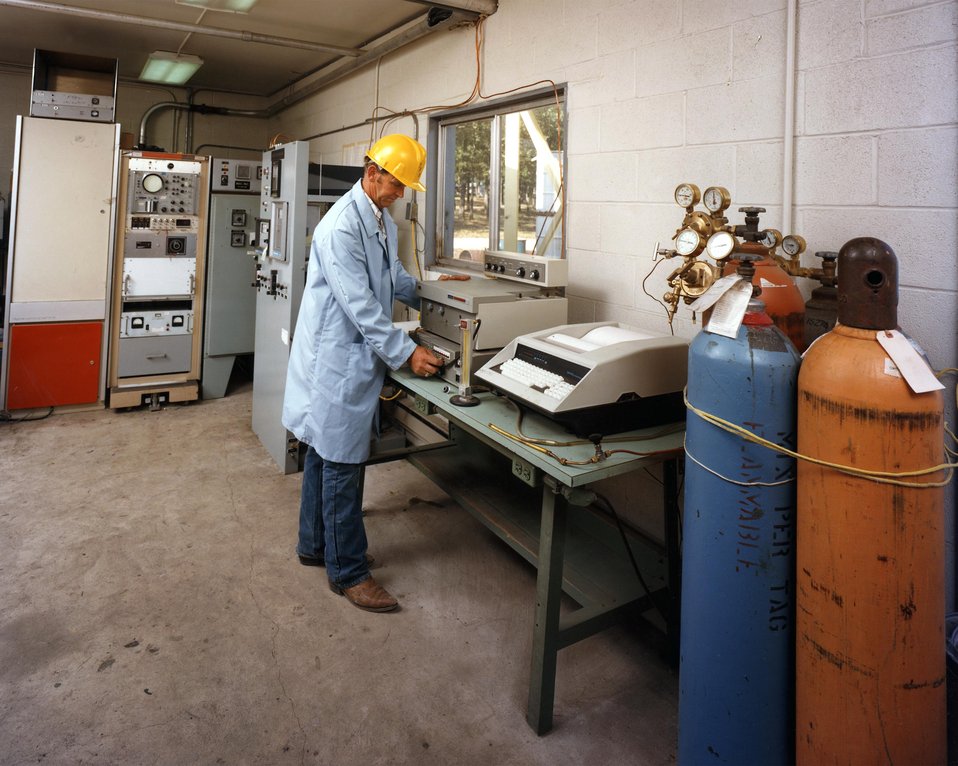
TECHNICIAN IS OPERATING THE GAS CHROMATOGRAPH WITH ITS ATTACHED COMPUTER FOR GAS ANALYSIS.

THE WOOD GASIFIER AT THE UNIVERSITY OF MISSOURI IS PART OF THE PROGRAM TO DEVELOP BIOMASS AS A FUEL SOURCE. WOOD CAN BE PROCESSED TO PRODUCE MEDIUM BTU GAS THAT CAN BE USED DIRECTLY OR UPGRADED INTO SUCH FUELS AS SYNTHETIC NATURAL GAS, METHANOL, AMMONIA, AND PETROCHEMICAL SUBSTITUTES. THE MAIN OBJECTIVE OF THIS PROGRAM IS TO IMPROVE CONVERSION EFFICIENCY AND PRODUCTIVITY AND REDUCE PRODUCTION COSTS OF THE GASIFICATION PROCESS. THE CONTROL ROOM OF THE GASIFIER PROJECT AT ROLLA, MO CONTAINS INSTRUMENT READOUT EQUIPMENT, AIR-PRHEATER CONTROLS FOR GAS ANALYSIS, AND COMPUTER PROCESS EQUIPMENT.